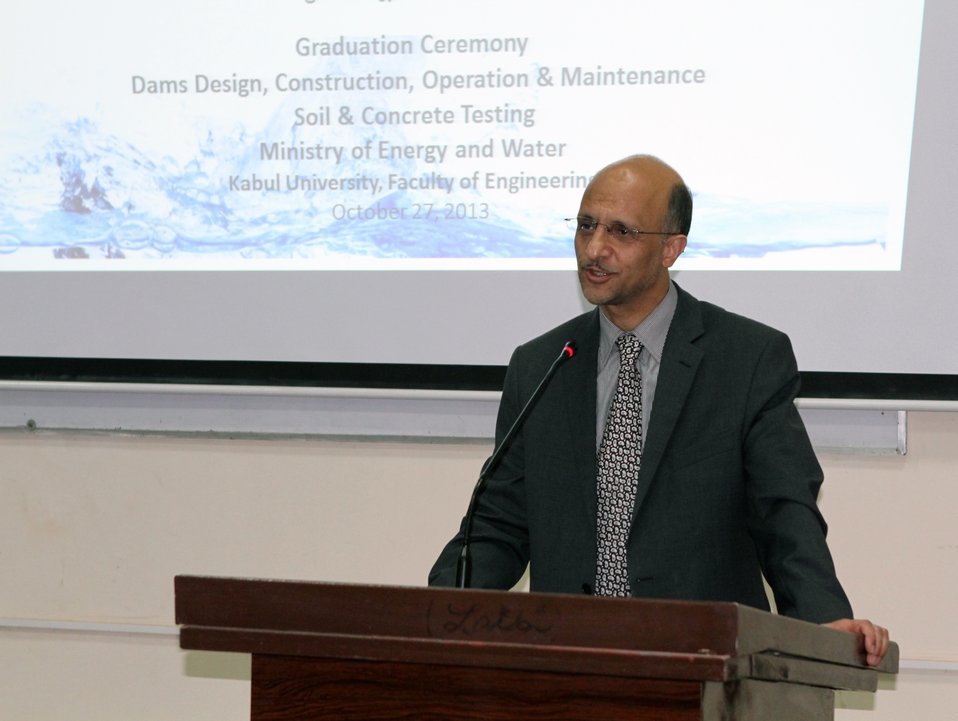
Professor Mohammad Osman Baburi, Deputy Minister of Higher Education addresses an audience at a certificate distribution ceremony at the Faculty of Engineering.